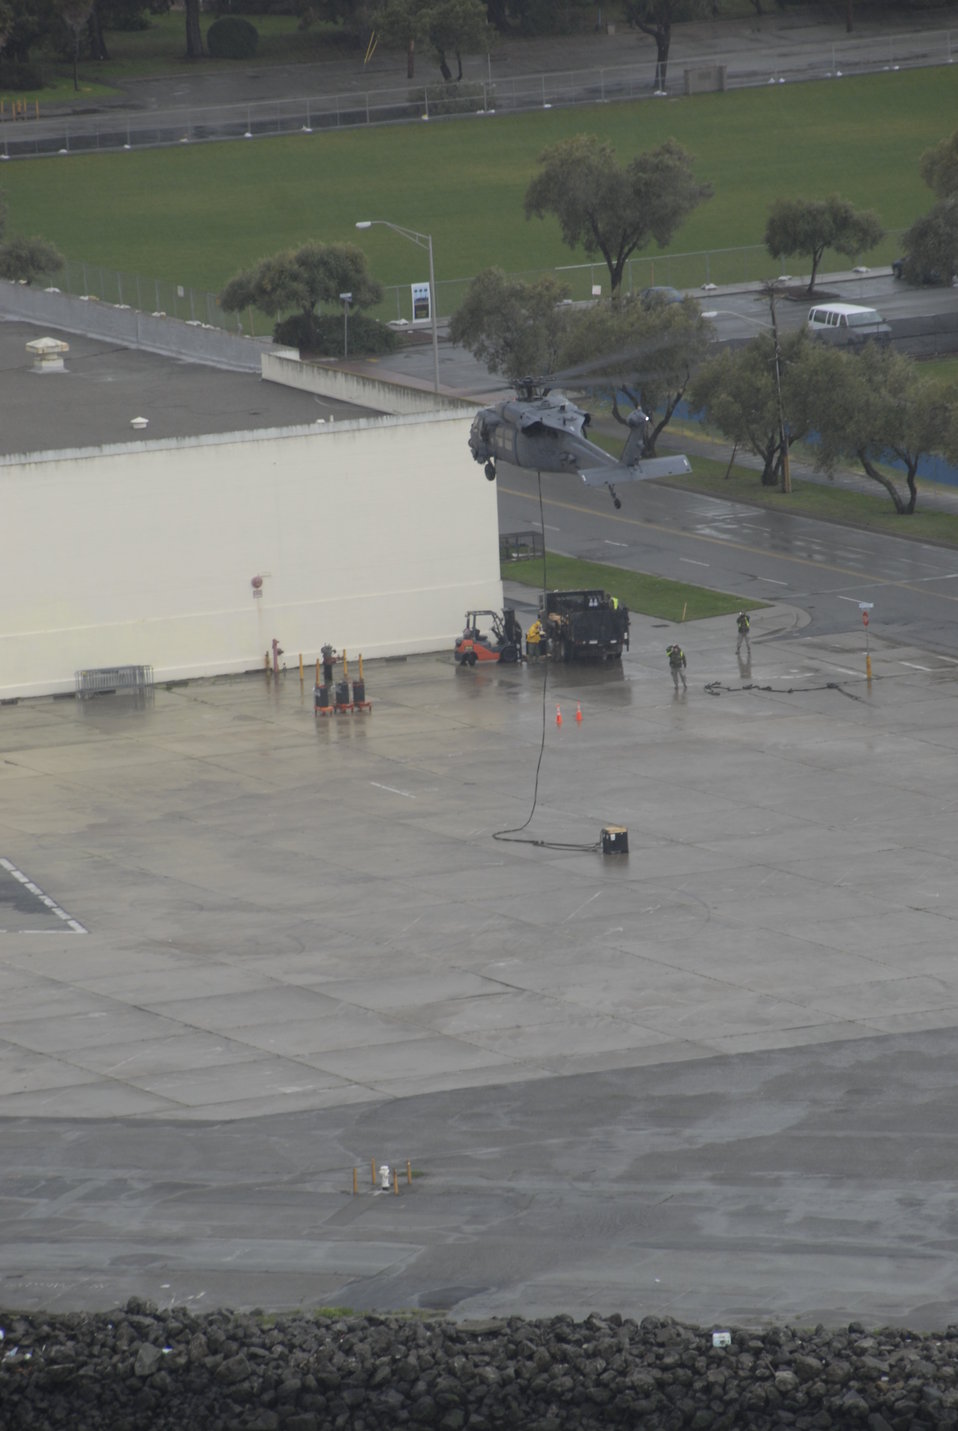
FARALLONS BATTERY MISSION

An HH-60G Pave Hawk helicopter from the California Air National Guard's 129th Rescue Wing at Moffett Federal Airfield, Calif., rises to take the slack out of a sling line attached to a crate of photovoltaic batteries. The unit is supporting the U.S. Fish and Wildlife Service by transporting the batteries to power a lighthouse and workshop at the FWS research facility on Farallon Island, which sits some 30 miles west of San Francisco.